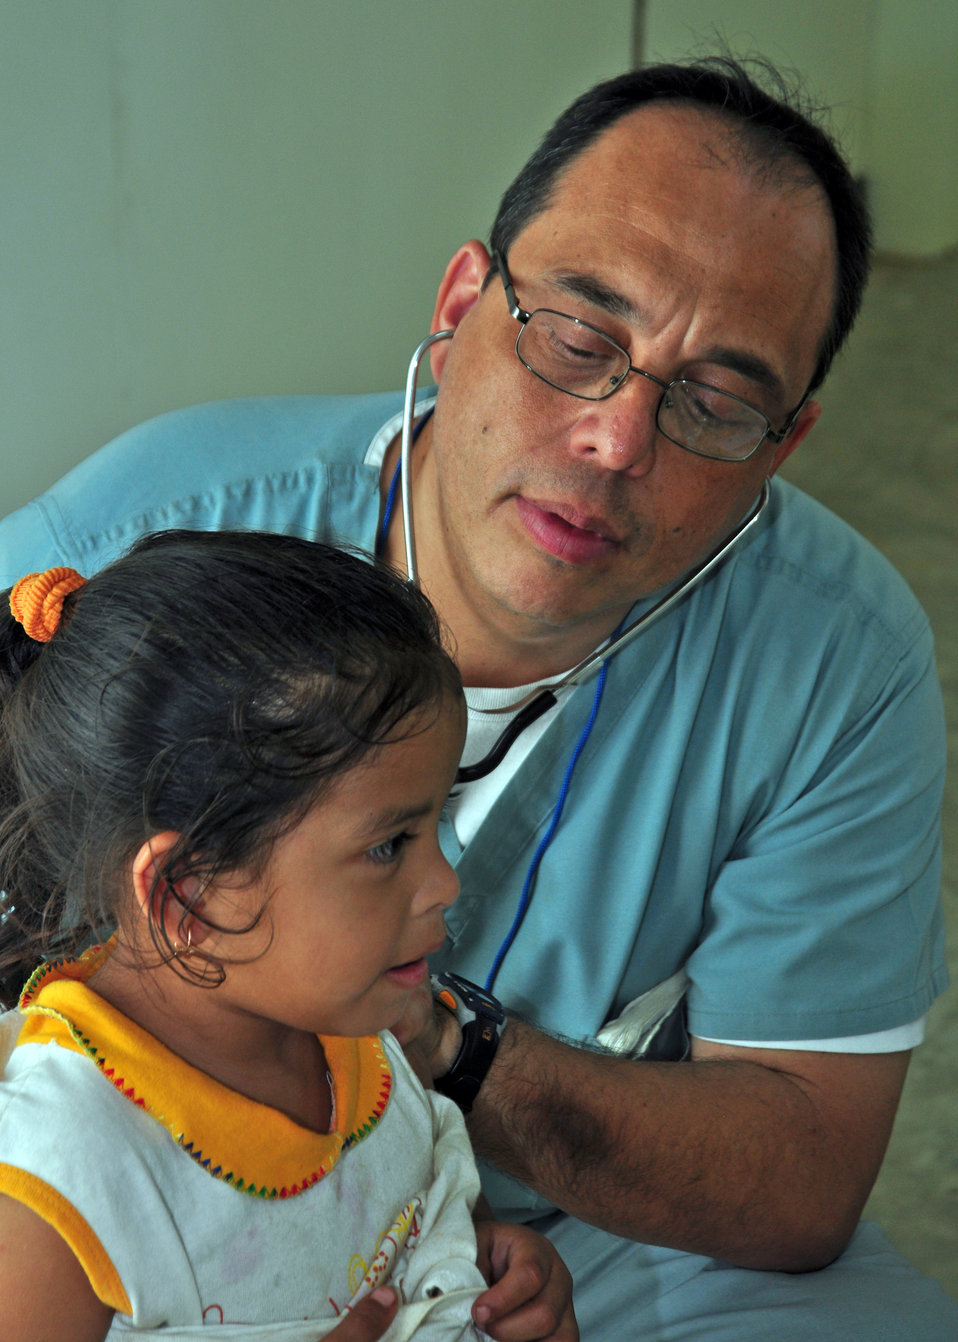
Soto Cano servicemembers provide 630 people medical care in Belize

Dr. Guillermo Saenz checks a Belizean child for respiratory problems during medical readiness training exercise March 3, 2010, in Armenia, Belize. Doctor Saenz is assigned to the Joint Task Force-Bravo medical element.